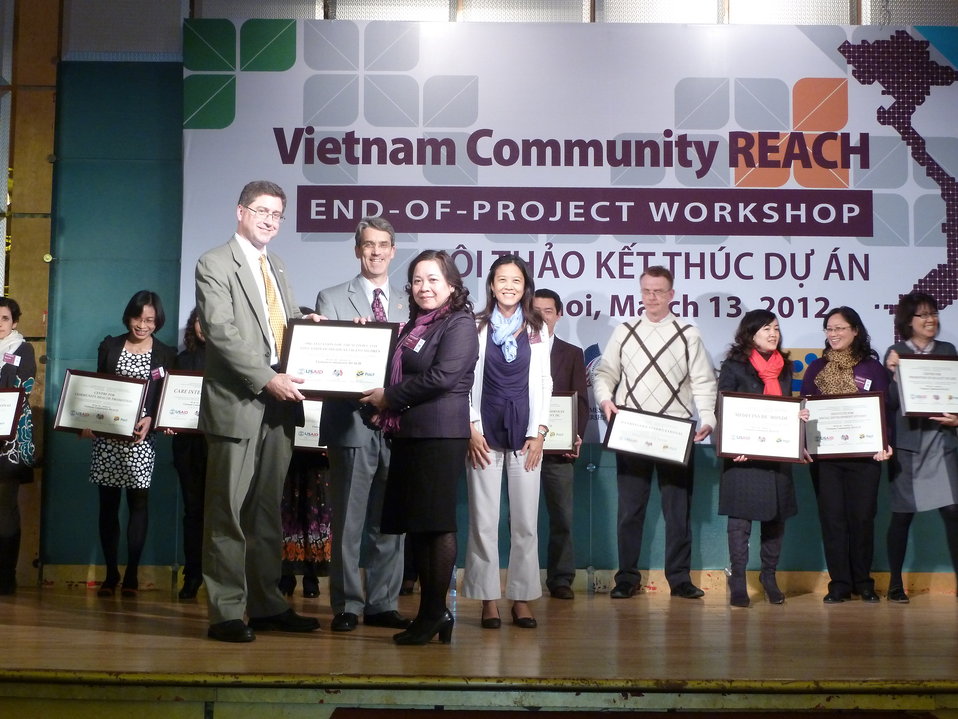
USAID, PEPFAR, and Pact award certificates to local and international partners for their work in addressing HIV in Vietnam

Community REACH project close-out with USAID and implementing partner, Pact